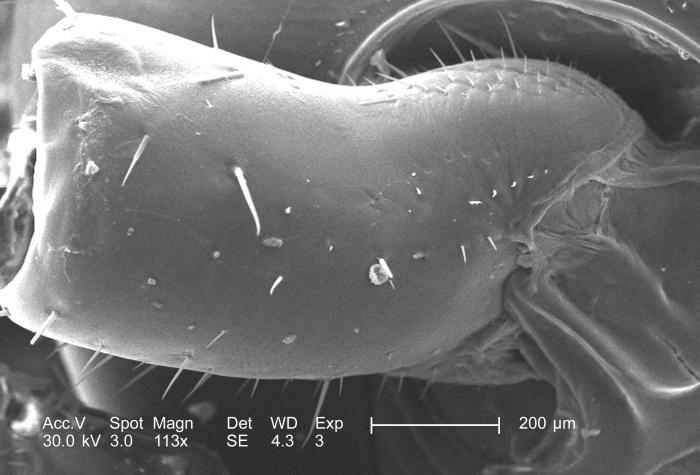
Magnified 113x, this 2005 scanning electron micrograph (SEM) depicted the first segment of one of the two antennae found on the head region of a roach found deceased in a Decatur, Georgia home. Each of the two antennae had been fractured off where the first segment, known as the 'scape', joined the 'pedicle', or the second antennal segment. What was revealed here was the direct attachment of the scape to the head.